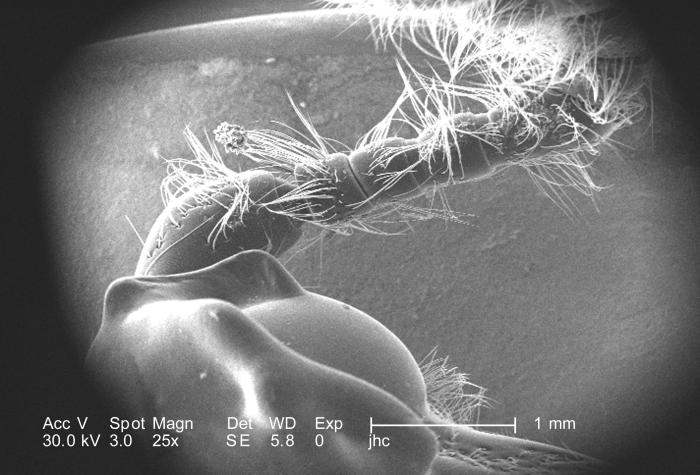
Under a very low magnification of 25X, this scanning electron micrograph (SEM) depicted some of the exoskeletal morphologic characteristics displayed on the head region of an unidentified beetle found deceased in the suburbs of Decatur, Georgia. In this particular view, the insect's left antenna can be seen emanating from the side of its head, and looking carefully one can see the proximal 'scape', a single 'pedicle', and the distal, multisegmented 'flagellum'.The scape attaches the sensory organ to the head region, and the pedicle joins the distal, jointed, flagellum to the scape. In many species of beetles, depending upon its morphology, the flagellum is further subdivided into a club, composed of the fused apical 'flagellomeres', and the 'funicle', or 'funniculus', composed of the flagellomeres between the club and the scape.